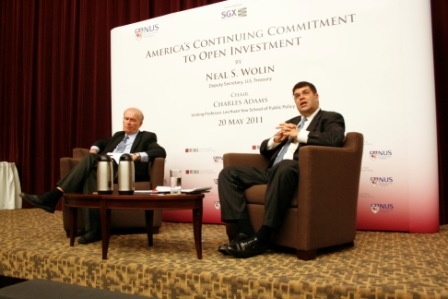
Deputy Secretary Wolin's Trip to the Pacific Rim

Following his speech, Deputy Secretary Neal Wolin participated in a moderated discussion with Professor Charles Adams, Visiting Professor at the Lee Kuan Yew School of Public Policy at the Singapore Exchange.